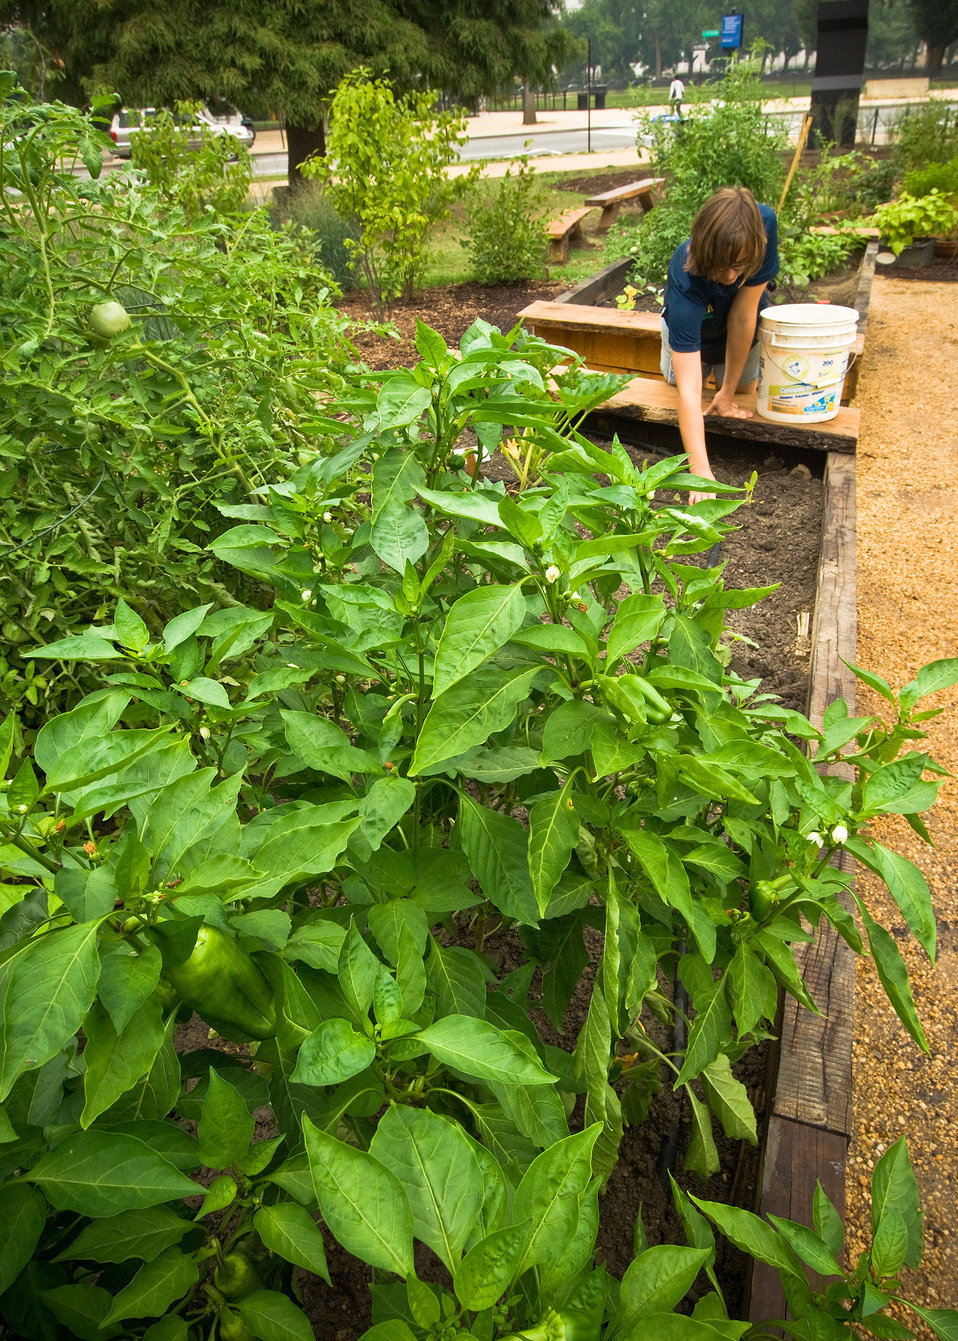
Meredith Kotelec, a University of Maryland intern with the US Department of Agriculture's Office of Operations tends to The People's Garden planted in the North East corner of USDA. Kotelec's college major is Horticulture and Crop Production. USDA Photo 09di1541-08